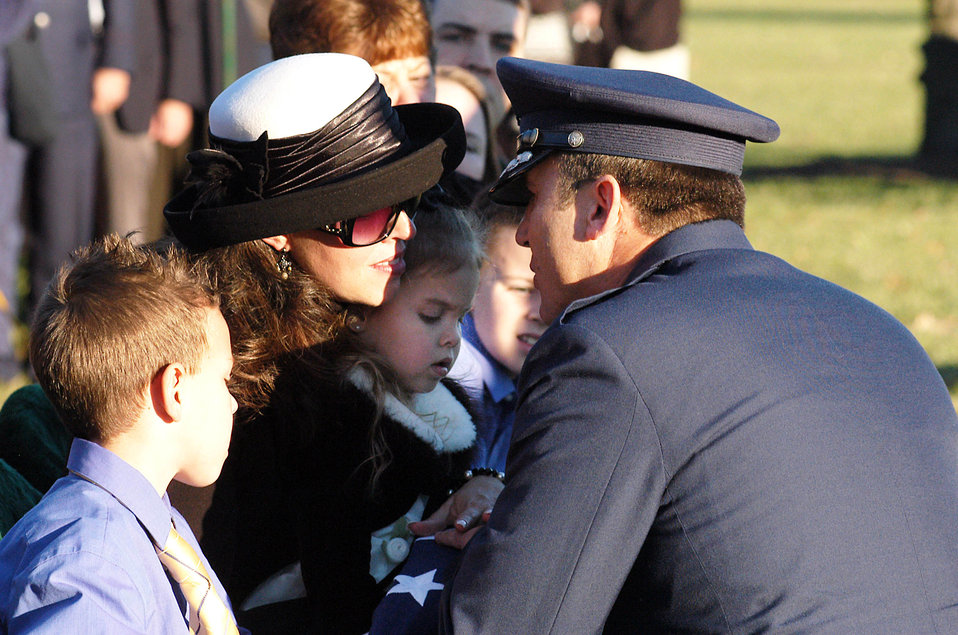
Laid to rest

Brigadier Gen. Noel T. Jones presents the American flag to Ginger Gilbert, widow of Maj. Troy Gilbert, Dec. 11 at Arlington National Cemetery in Virginia. Major Gilbert, an F-16 Fighting Falcon pilot, was killed Nov. 27 when his plane crashed 20 miles northwest of Baghdad.